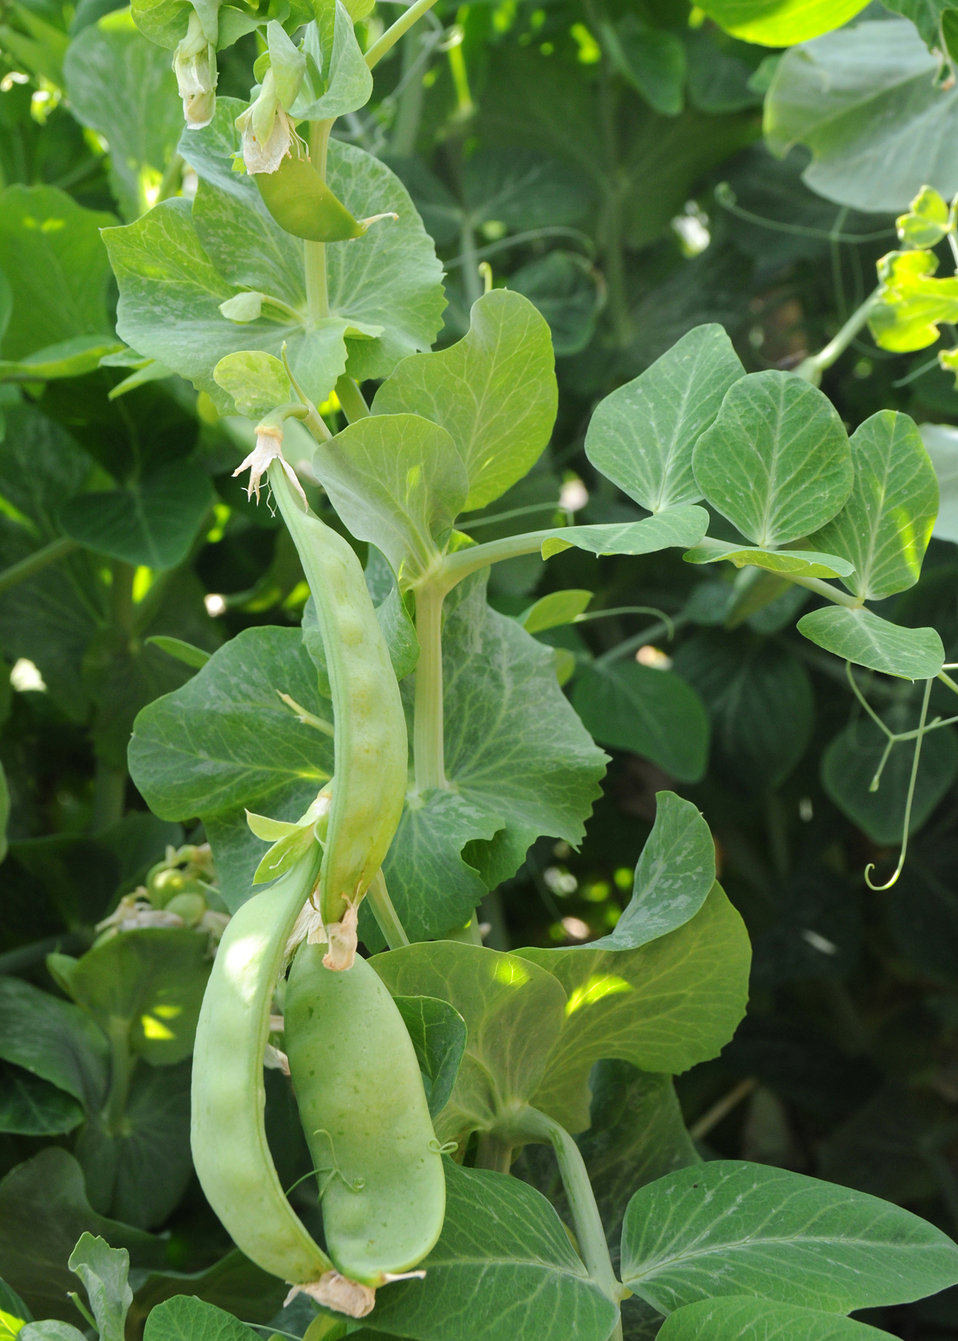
On Friday, May 28, 2010 the Department of Agriculture People’s Garden in Washington, DC, is ready for the harvesting of its first crop of snow peas. USDA photo 10di1383-33.